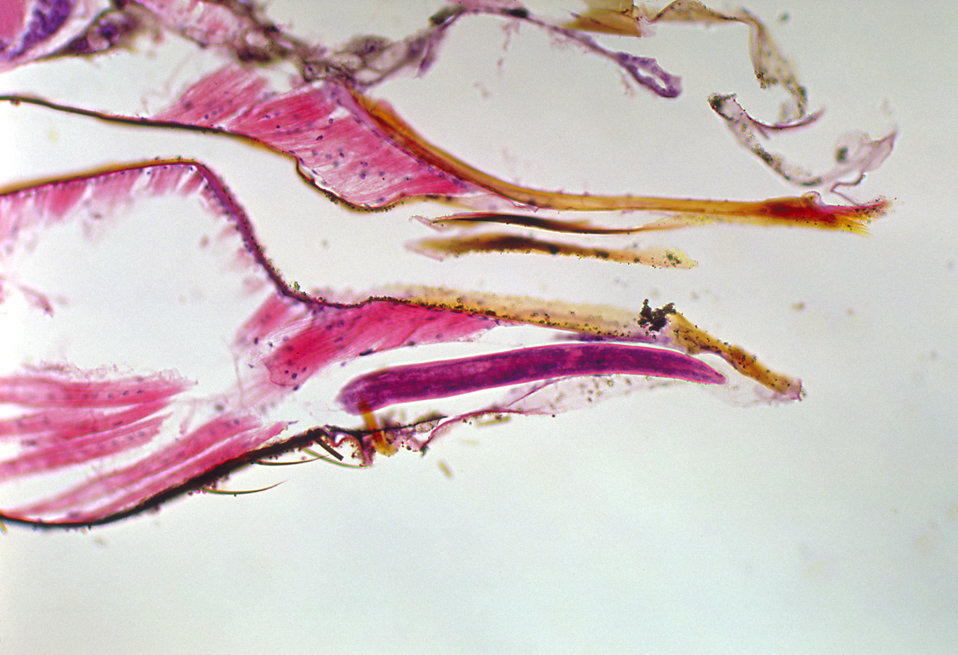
A photomicrograph revealing the histology of Onchocerca volvulus developing in a Black Fly, Simulium ochraceum.